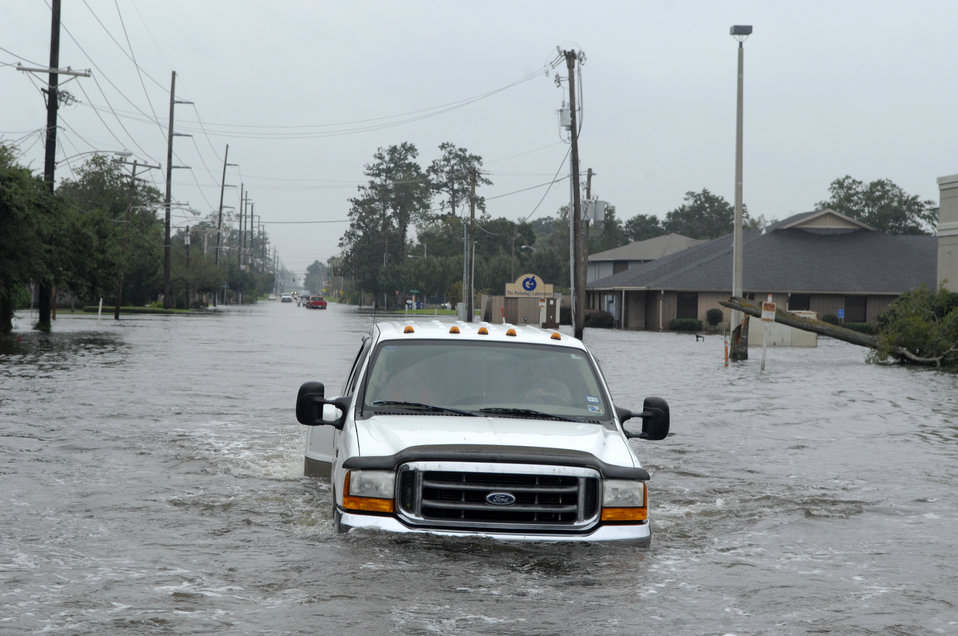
Watchful Eye

Lake Charles, La., residents brave the high flood waters caused by Hurricane Ike Sept. 13 in order to make damage assessments to their homes.